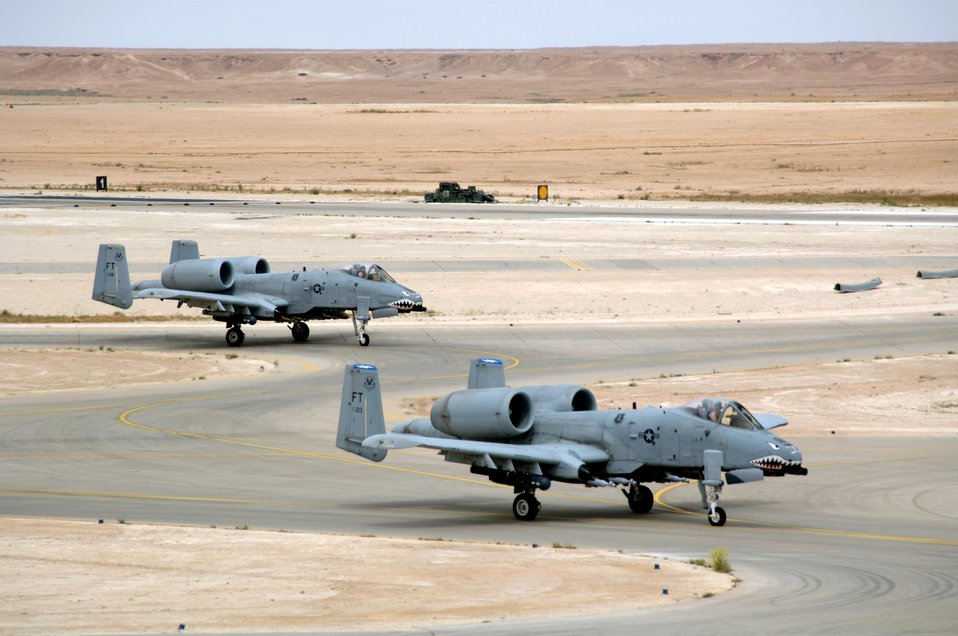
Airpower Summary

Two A-10 Thunderbolt IIs taxi out for a mission to provide close-air support for coalition forces in the region. The A-10 has excellent maneuverability at low air speeds and altitude, and is a highly accurate weapons-delivery platform.